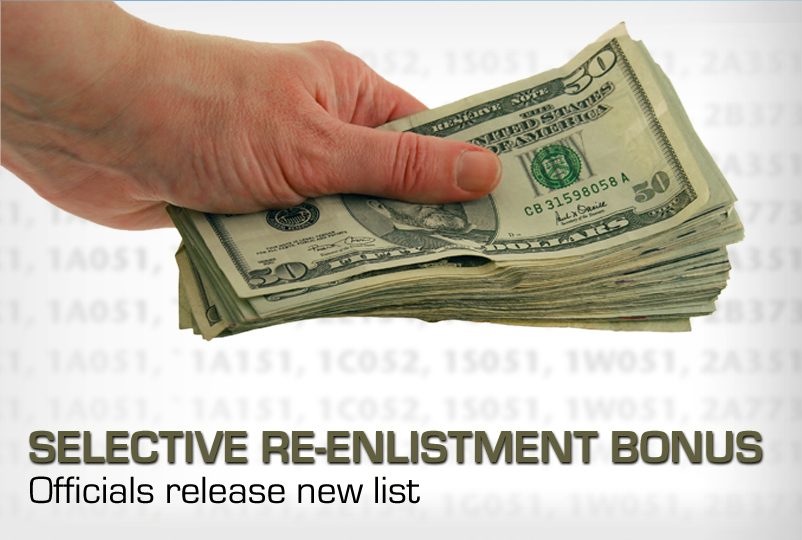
Selective re-enlistment bonus